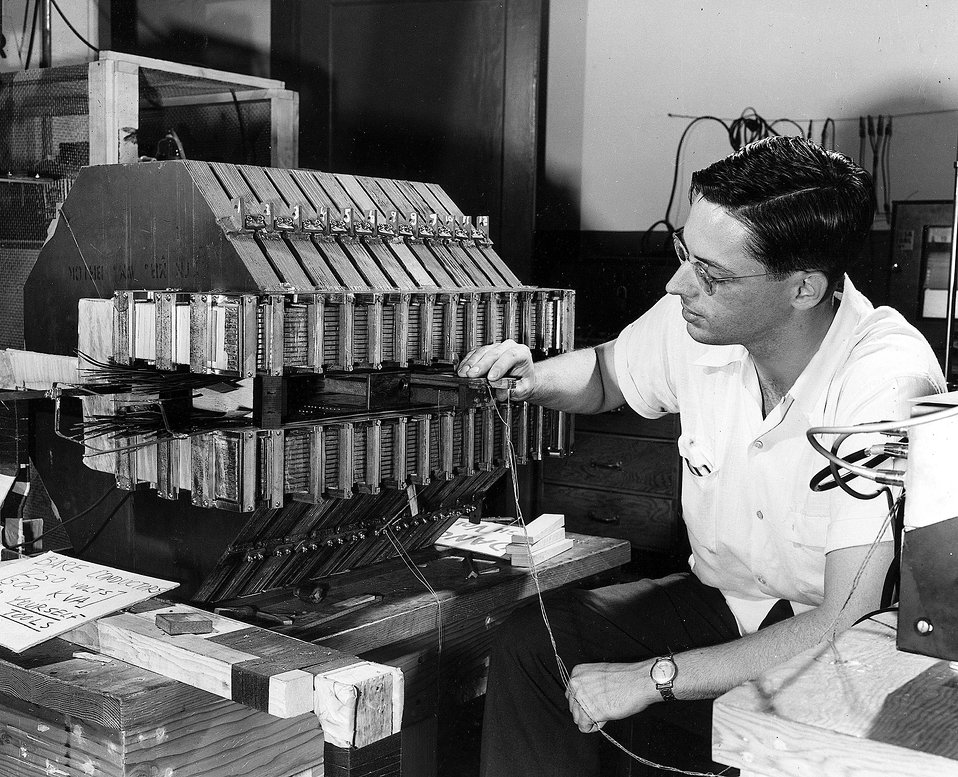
Quarter scale model - Mark IV of Cosmotron magnet set-up for measurements of the effects of pole face windings. (Personnel - W. French). c. 1949